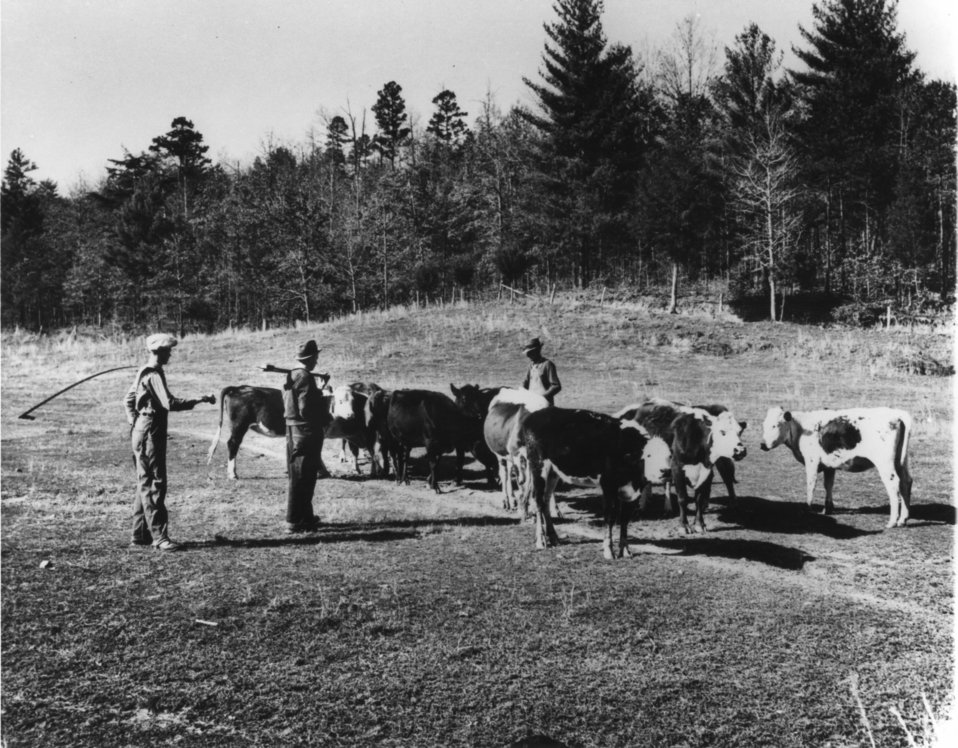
Early settlers at Oak Ridge